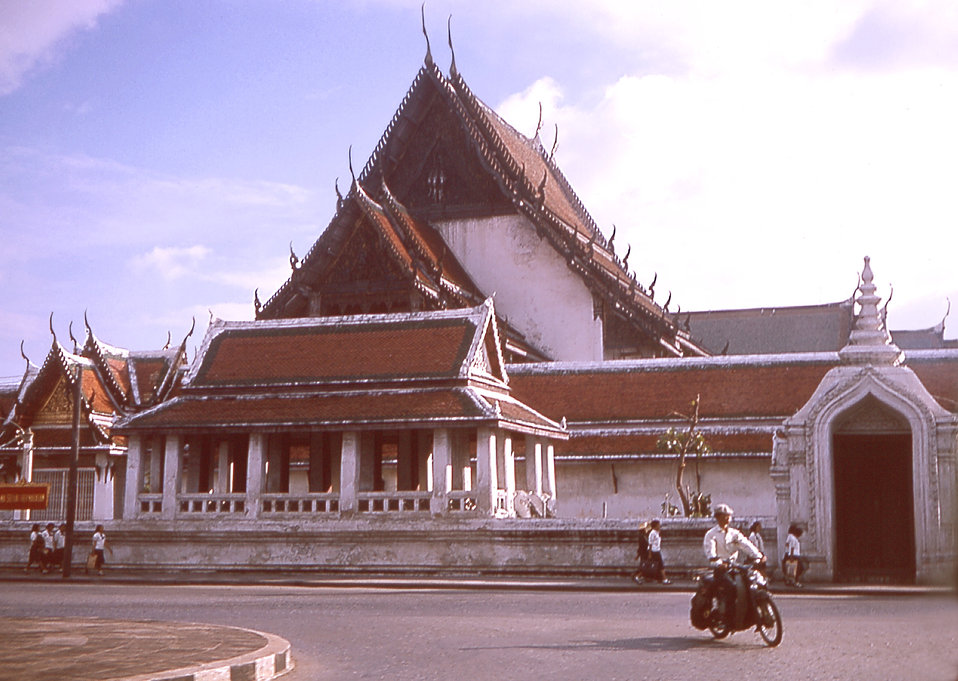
Dr. Alex Langmuir shot this 1964 photograph of a temple in Bangkok, Thailand during an EIS group visit.